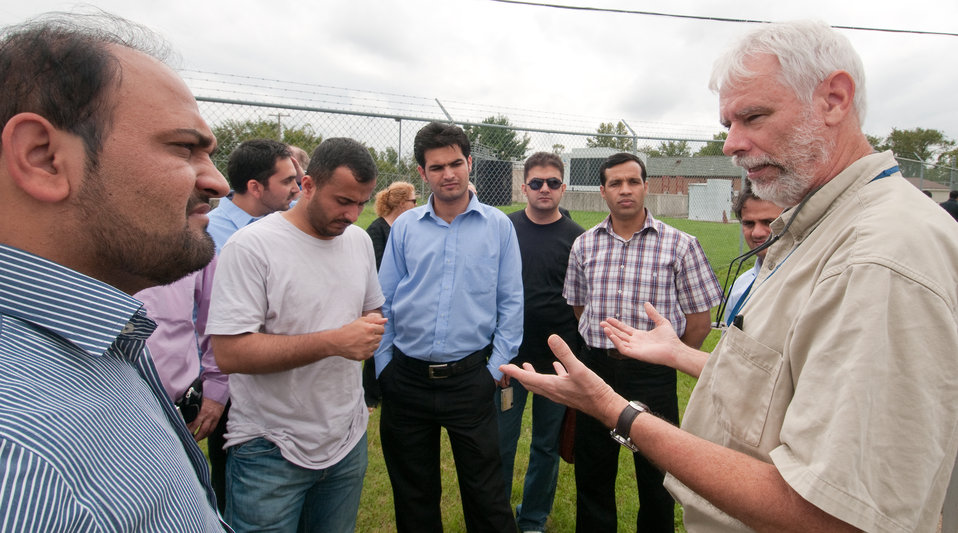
U.S. Department of Agriculture (USDA), Agriculture Research Service's (ARS) Dennis Timlin (right), spoke with 12 Borlaug Fellows from Afghanistan’s Ministry of Agriculture, Irrigation and Livestock (MAIL) about the Global Climate Change Lab at the ARS facility’s Soil Plant Atmosphere Research (SPAR) units in Beltsville, MD, on Wednesday, September 21, 2011. SPAR units provide precise control of the major environmental variables influencing crop growth including temperature, humidity, and atmospheric carbon dioxide concentration. The SPAR units are fully automated to measure crop canopy gas exchange including photosynthesis, respiration, transpiration and water use efficiency.